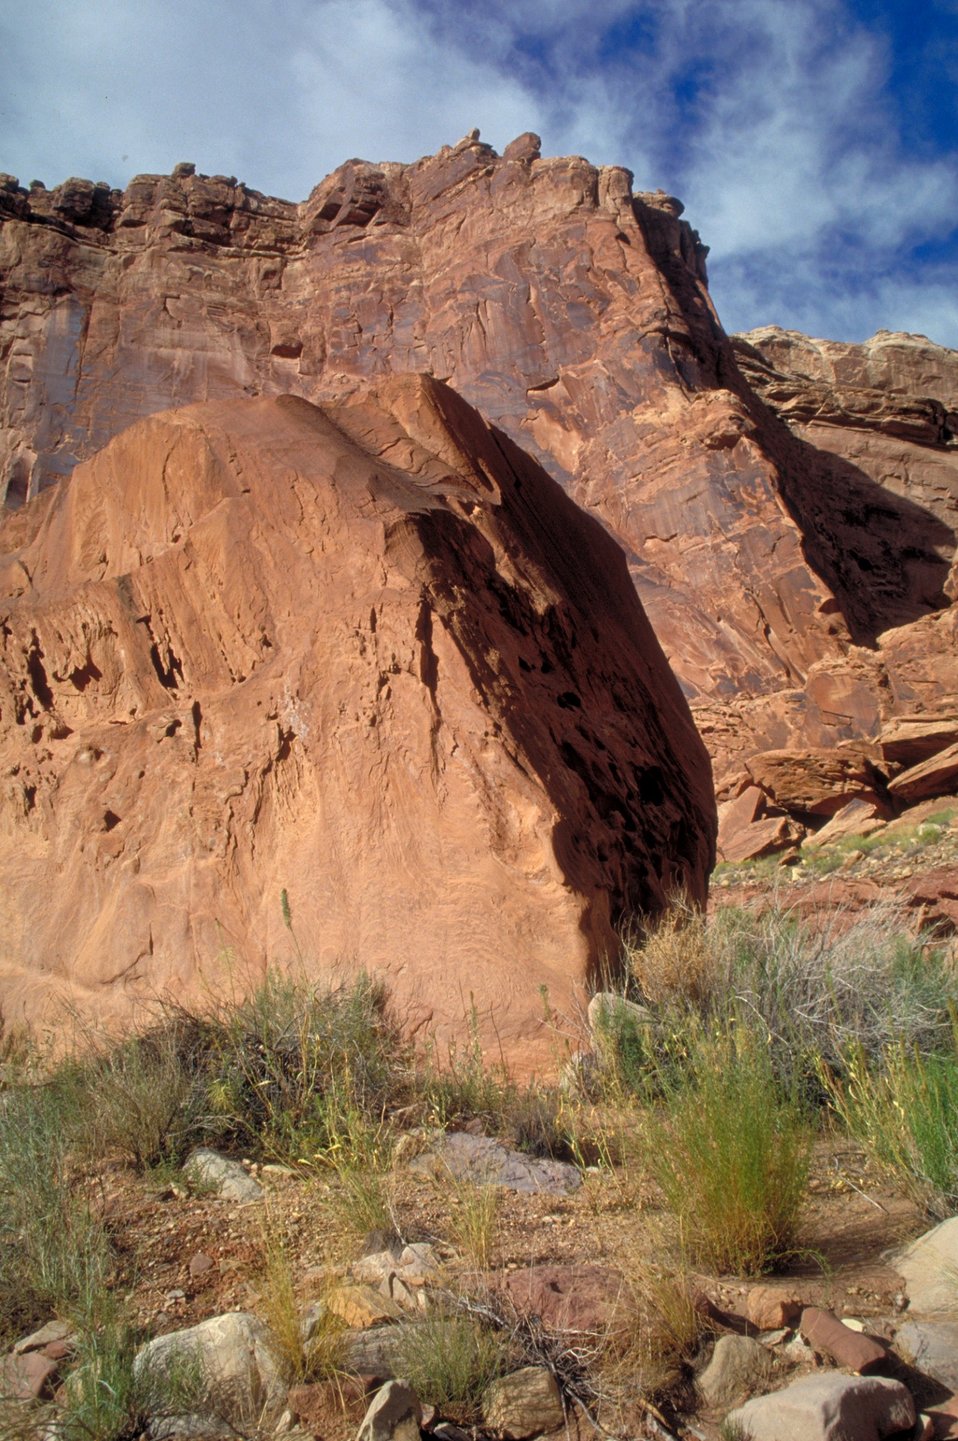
Black Dragon Wash near Green River, Utah.